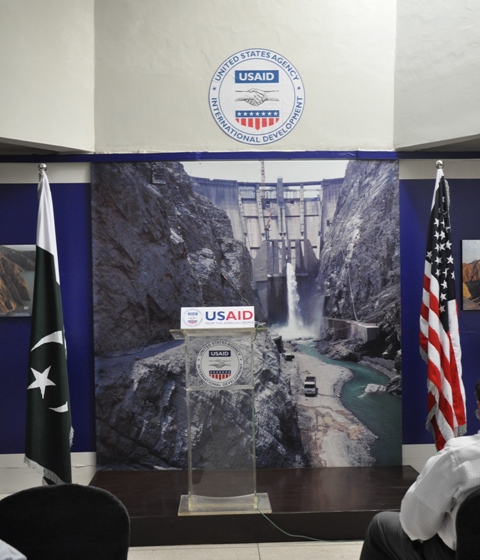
Photo Exhibition at Alhamra Art Gallery